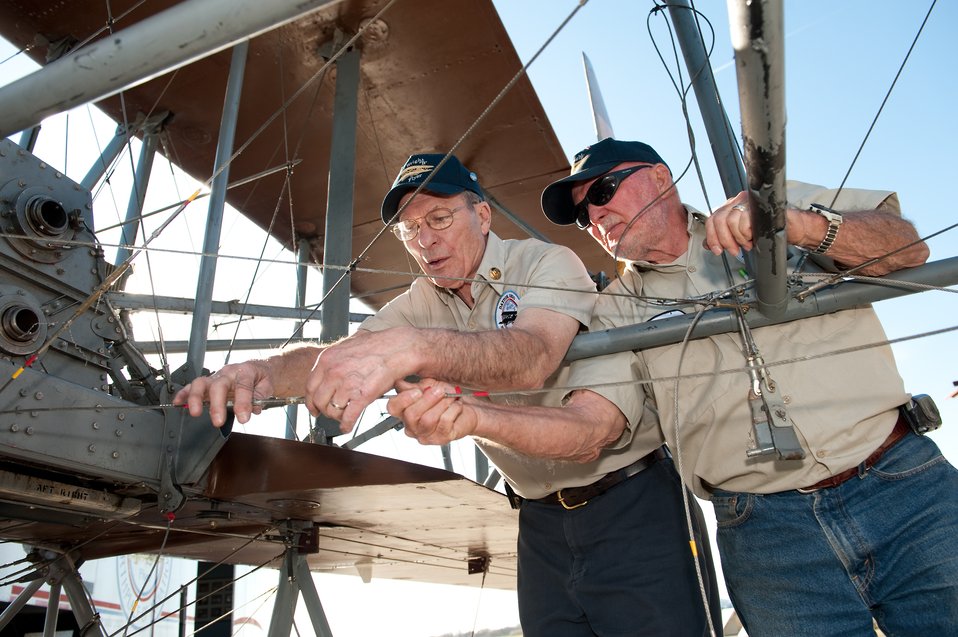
Wright

Don Stroud and Frank Fager, Wright